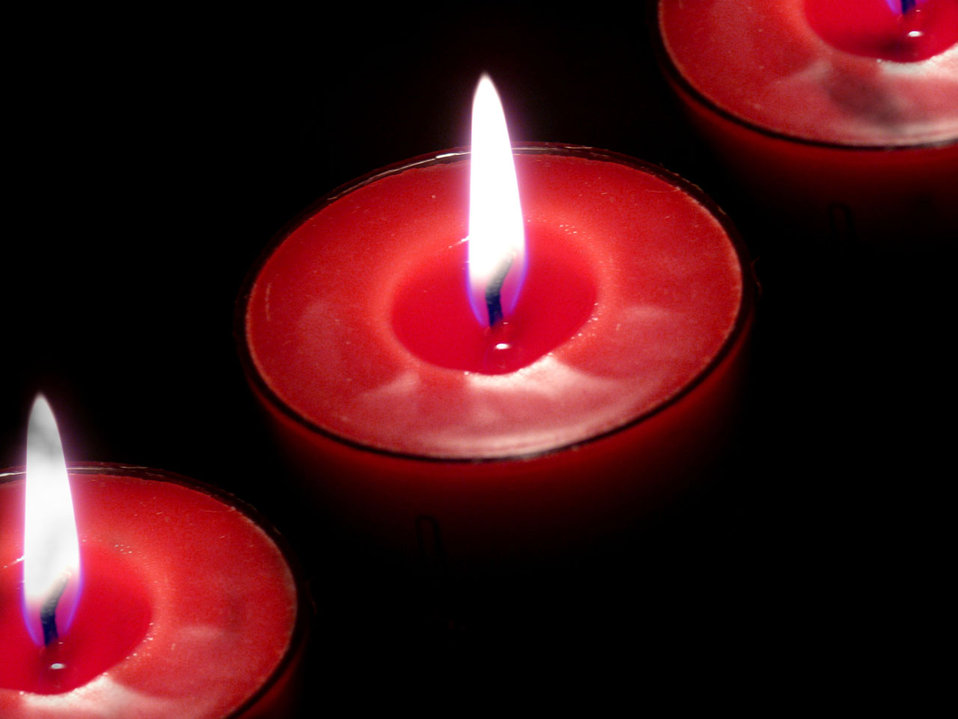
Candles

Three red candles.